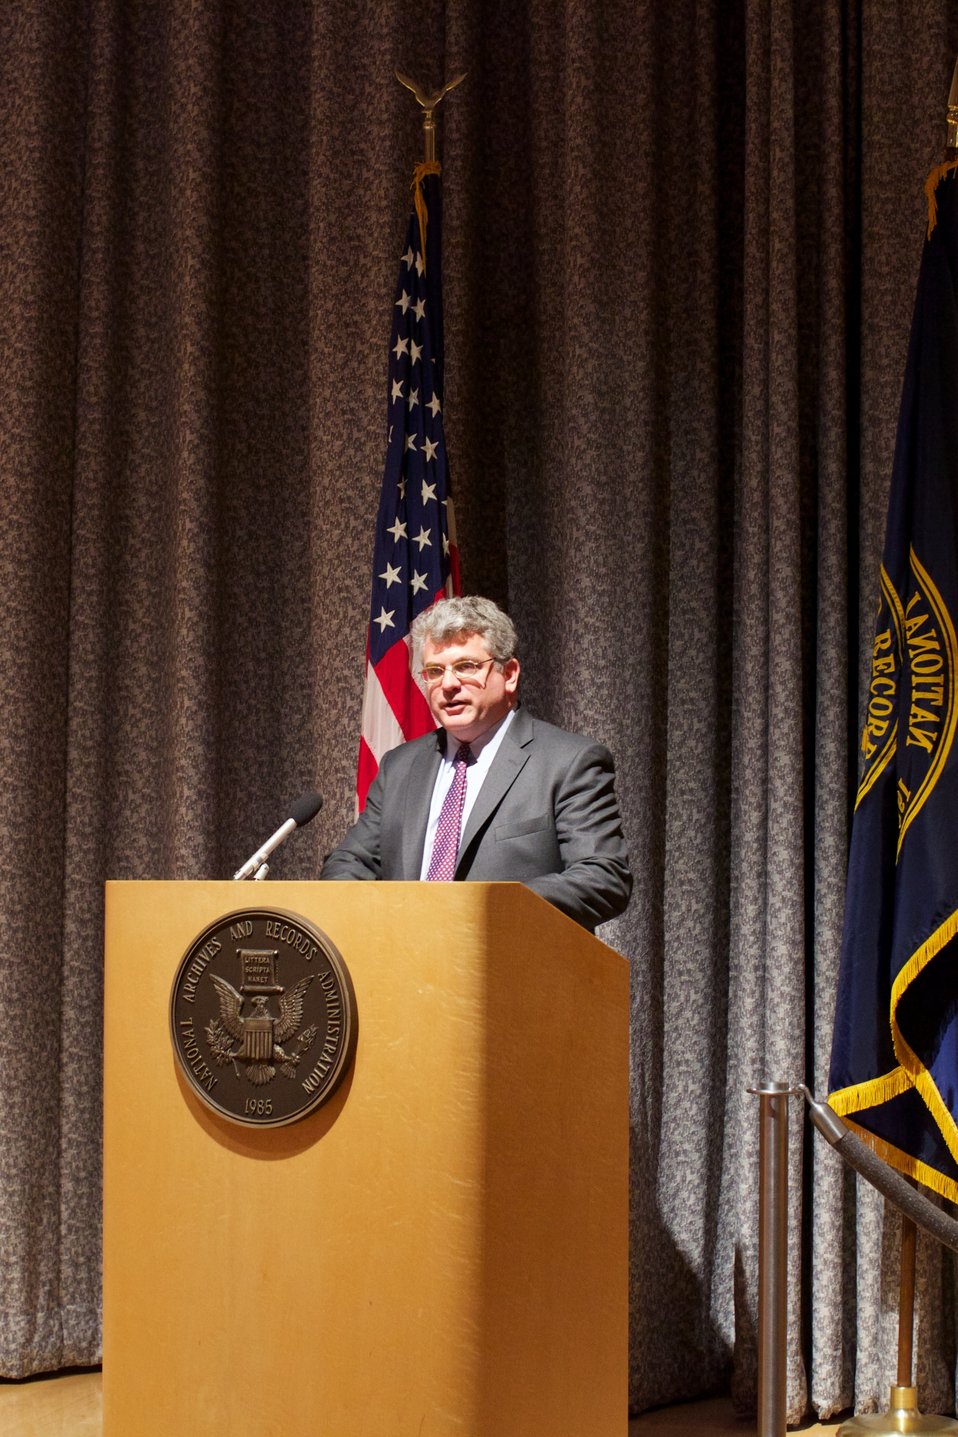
CFC Recognition Event